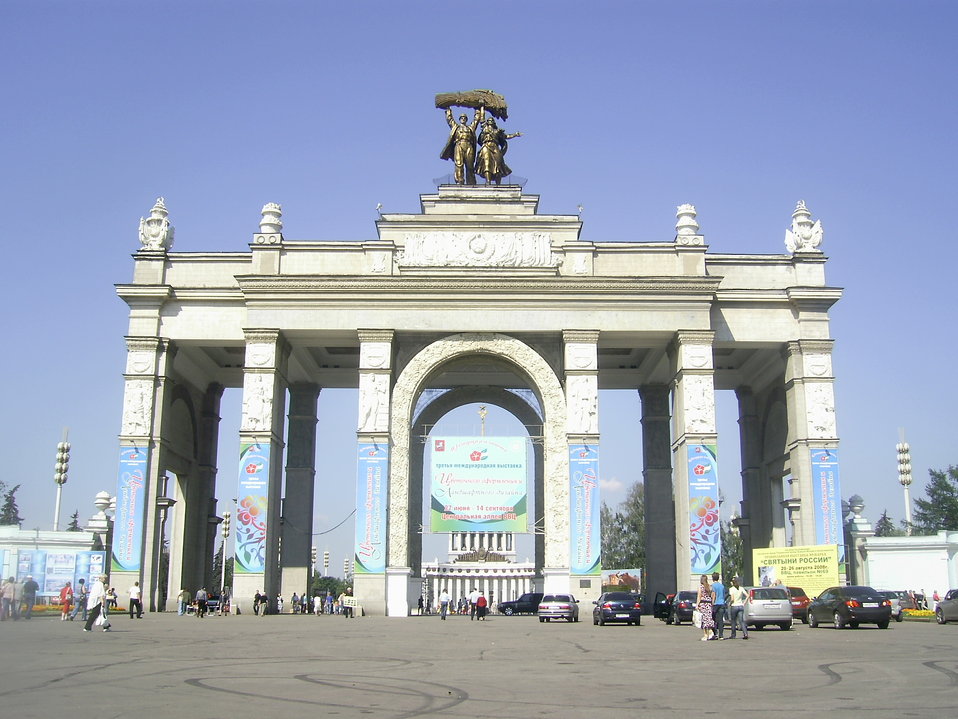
Русский: Главный вход ВСХВ 1954 года